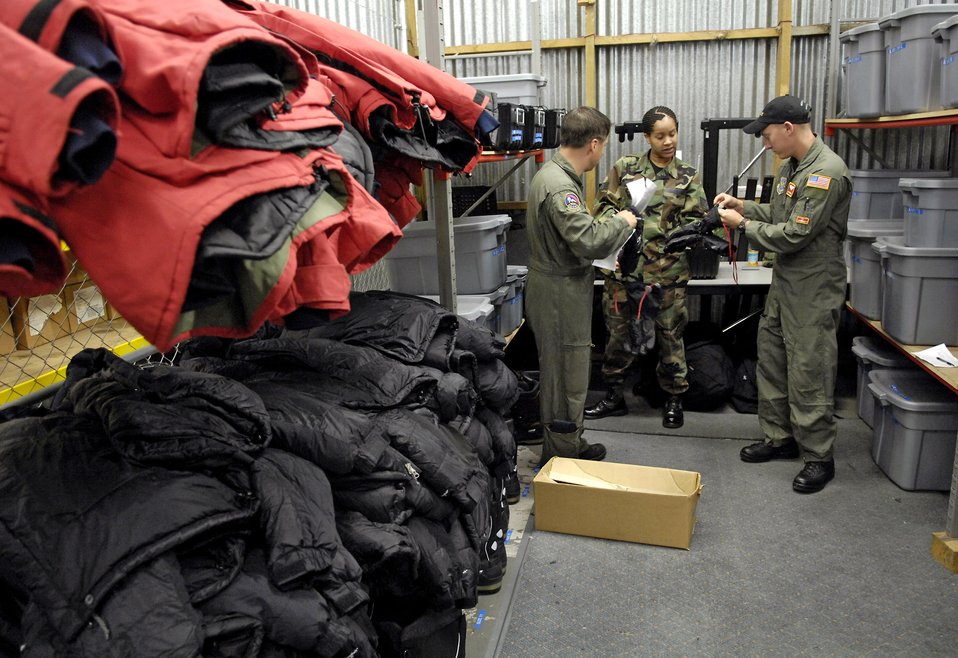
Getting ready to fly to McMurdo

C-17 Globemaster III loadmasters are issued cold weather gear for the upcoming winter fly-in missions to Antarctica at Christchurch, New Zealand, Aug. 19. A C-17 and 31 Airmen from McChord Air Force Base, Wash. will begin the annual winter fly-in augmentation of scientists, support personnel, food and equipment for the U.S. Antarctic Program at McMurdo Station Aug. 20. WinFly is the opening of the first flights to McMurdo station, which closed for the austral winter in February.